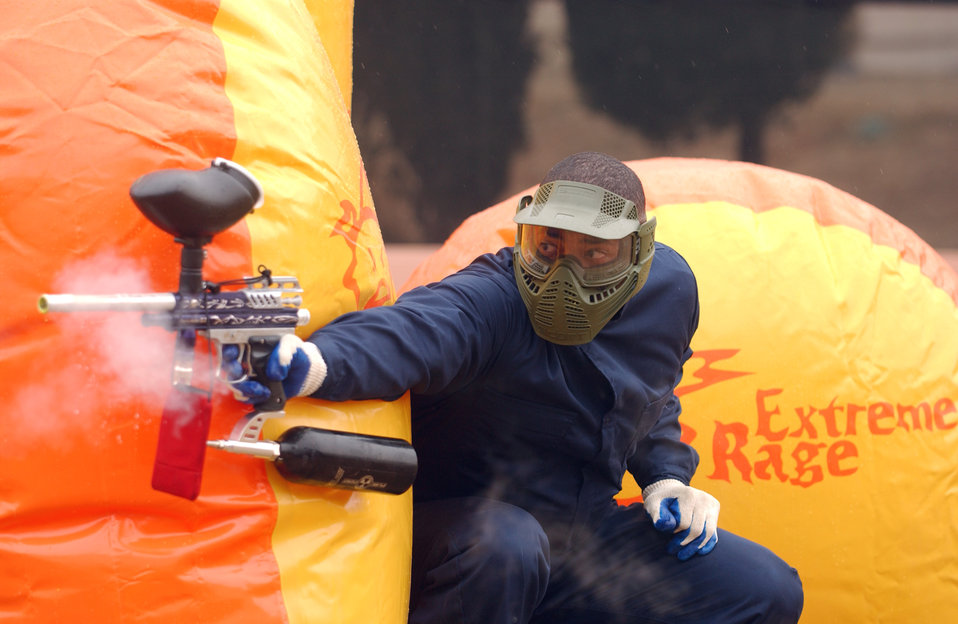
Paintball wars

Capt. Jerime Reid fires at the